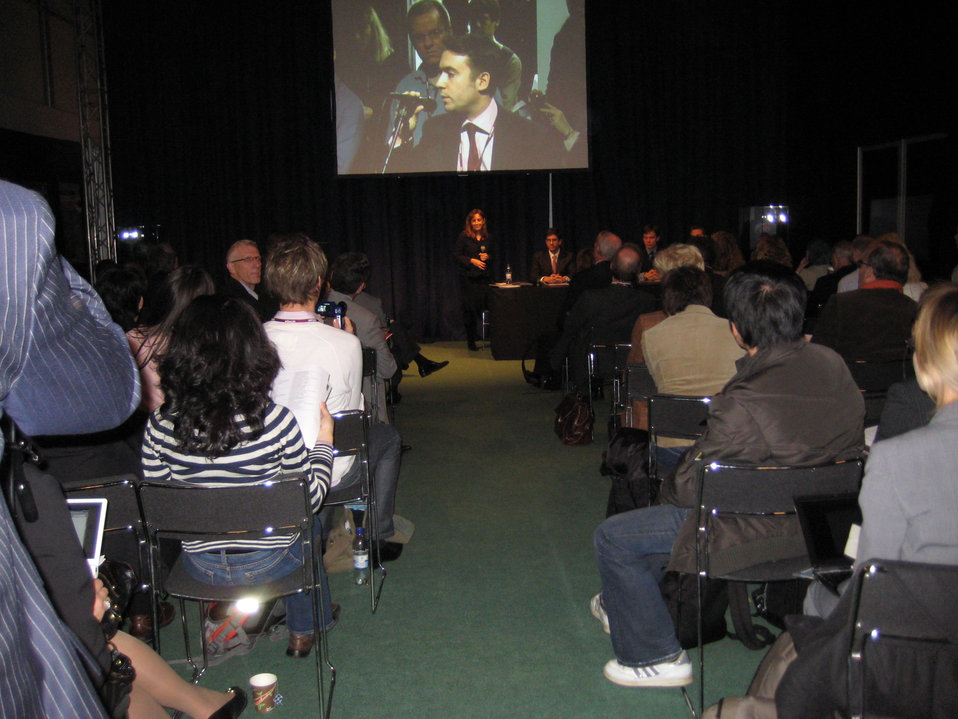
U.S. Center panel presentation at COP15 (Conference of the Parties to the UN Framework Convention on Climate Change) in Copenhagen, Denmark December 10, 2009.